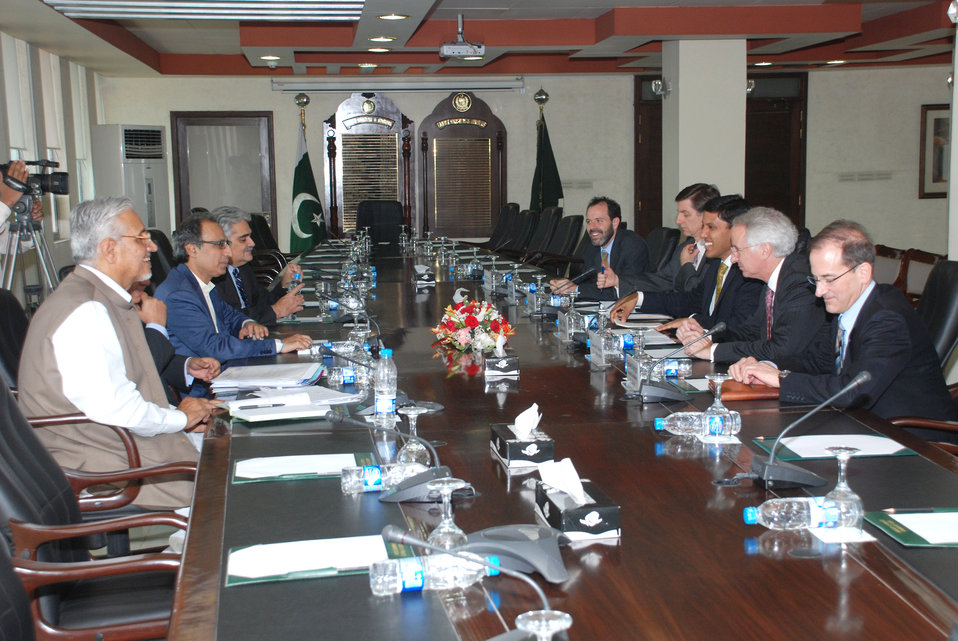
USAID and Pakistan Working Together to Promote Growth, Prosperity at Islamabad on April 13, 2012

Dr. Rajiv Shah (USAID) met with Finance Minister Hafeez Shaikh at the Ministry of Finance. The two discussed the important role economic assistance brings to the bilateral relationship, and how U.S. civilian assistance can create jobs and raise incomes for more Pakistanis.